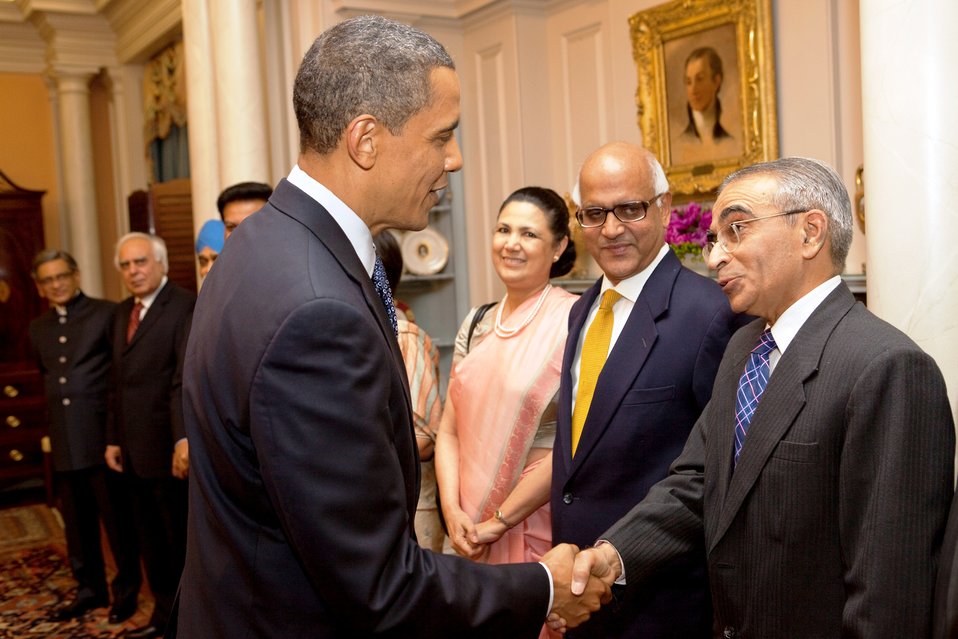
President Obama Shakes Hands With High-Ranking Indian Delegation Member

U.S. President Barack Obama shakes hands with a high-ranking member of the Indian Delegation at the U.S.-India Strategic Dialogue reception at the U.S. Department of State in Washington, D.C., on June 3, 2010.